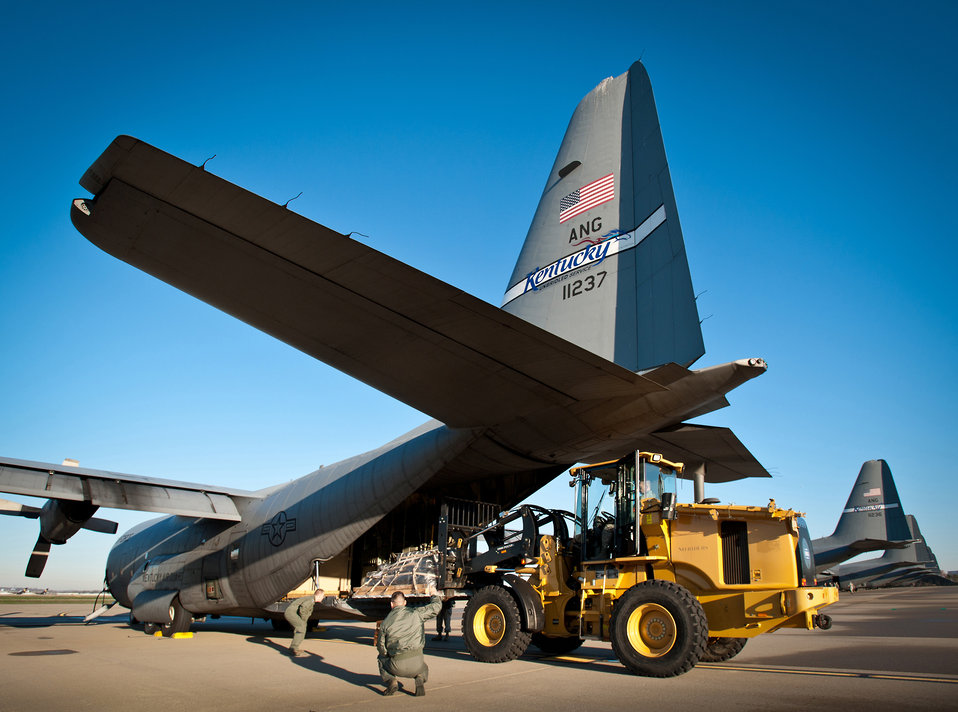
Mastering the load

Loadmasters from the Kentucky Air National Guard's 123rd Airlift Wing guide a pallet of cargo onto a C-130 Hercules April 2, 2011, on the flightline of the Kentucky Air National Guard Base in Louisville, Ky.